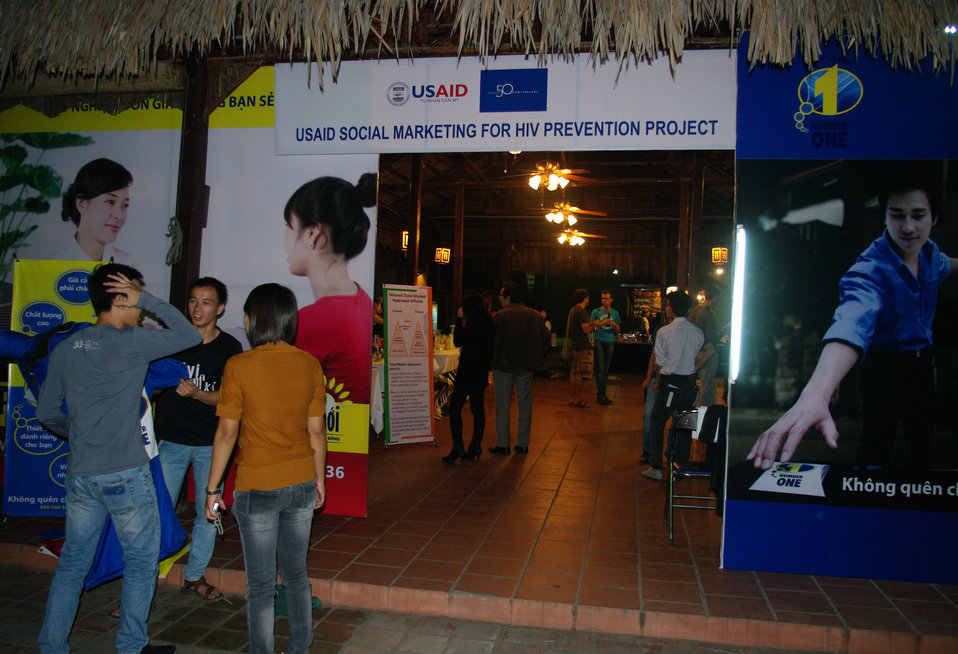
PEPFAR, U.S. Embassy Host Dengue Fever Concert in Hanoi